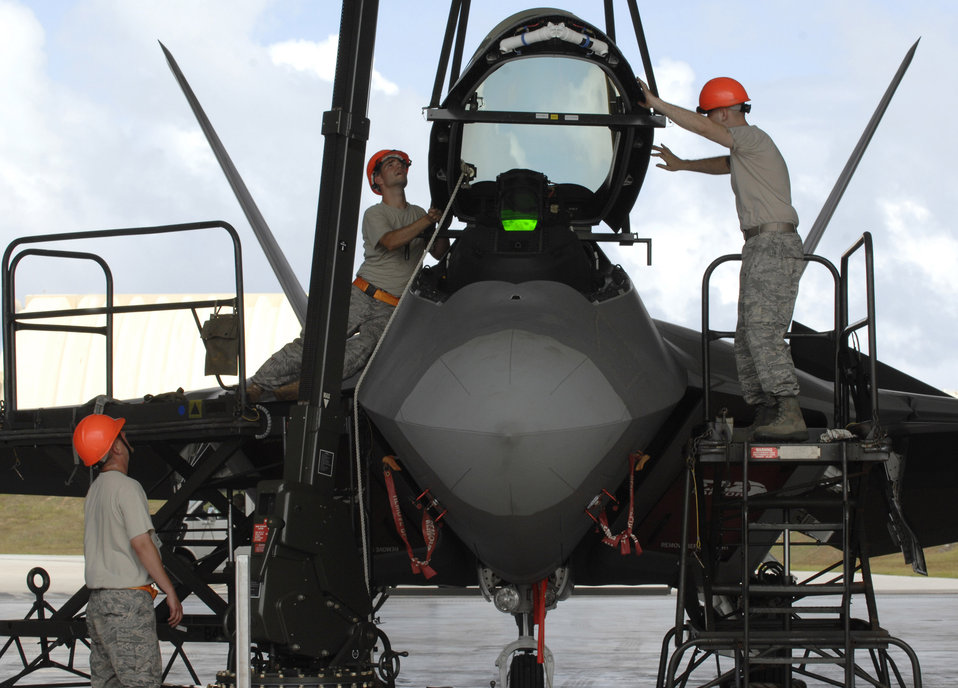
Egress technicians keep raptor pilots covered

Staff Sgt. Terry Vickery, Staff Sgt. Tim Sullivan, and Senior Airman Ryan Ott, install an F-22 Raptor canopy using an east-west hoist Feb. 18 at Andersen Air Force Base, Guam. The Raptors are deployed from Elmendorf AFB, Alaska, to Guam, for three months as the Pacific's Theater Security Package. The stealth-fighters, along with associated maintenance and support personnel, comprise the 90th Fighter Squadron and will participate in various exercises that provide routine training in an environment different from their home station. All are F-22 egress and systems specialists, deployed from Elmendorf and assigned to the 36th Expeditionary Maintenance Squadron.